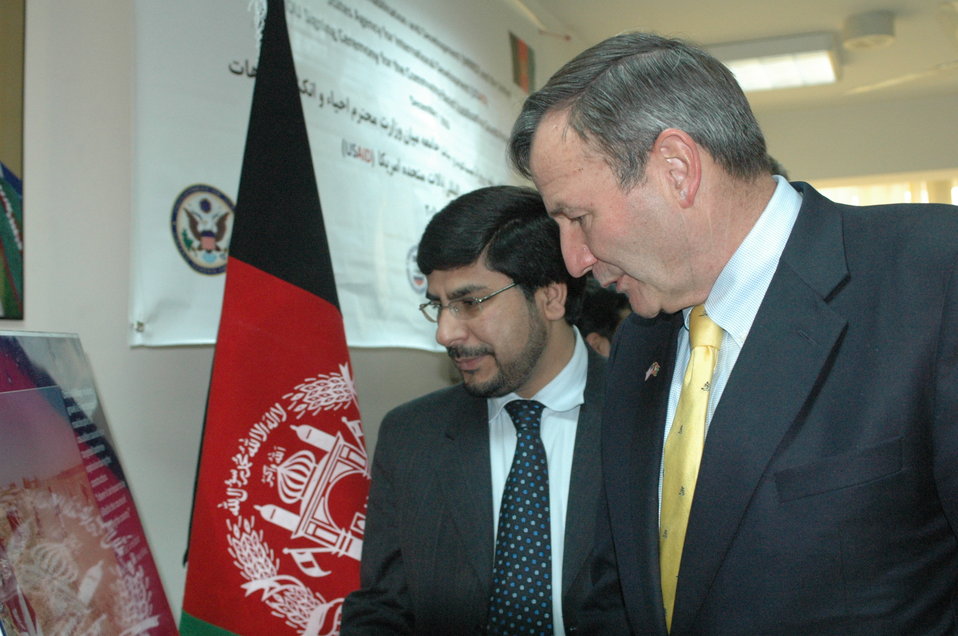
Community Based Stabilization Grants Ceremony, December 7, 2010